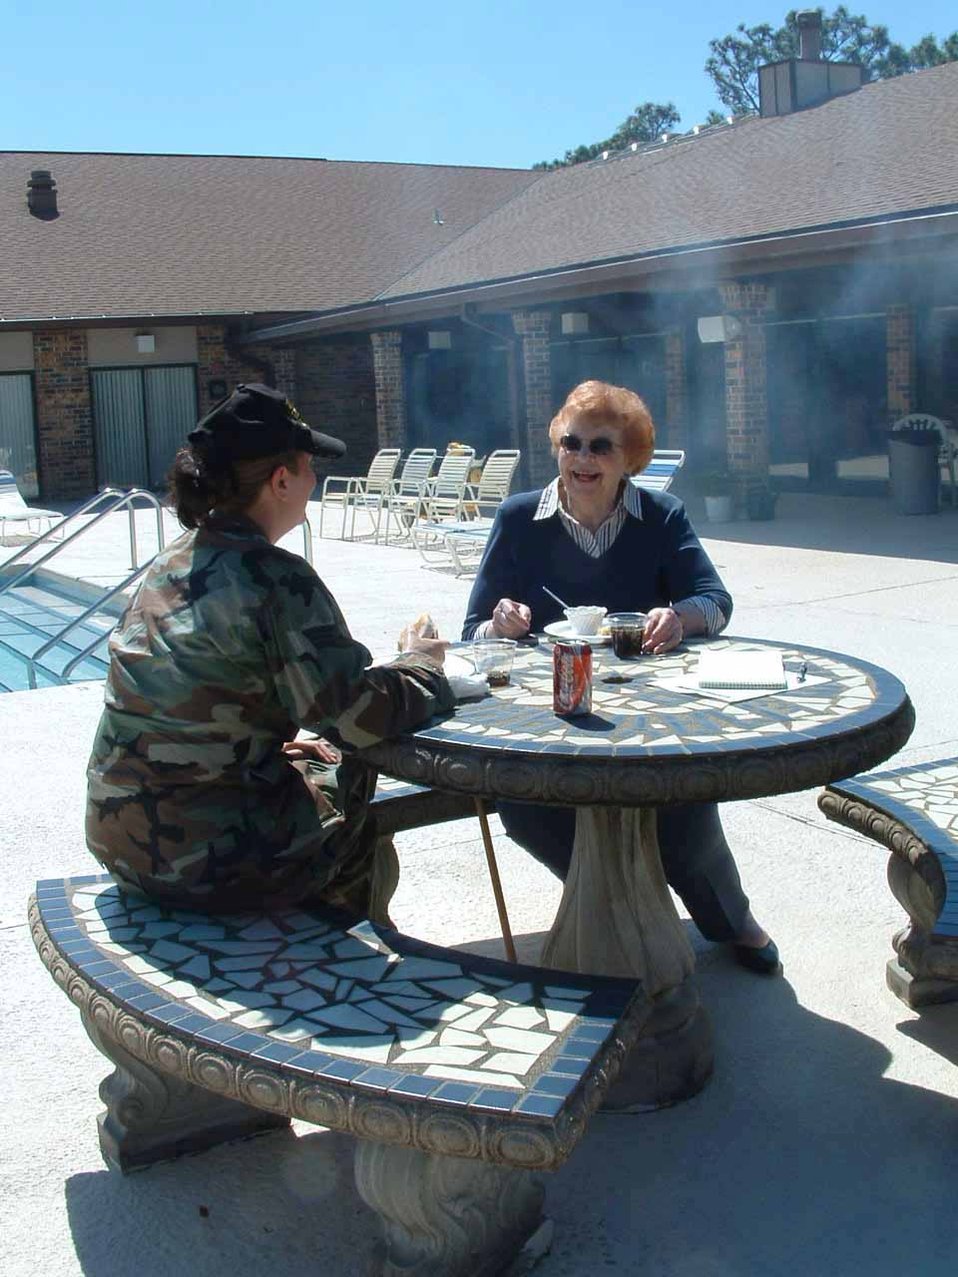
Airman studies psychology

Air Force Enlisted Village resident Sue Lell and Senior Airman Heather Puhl share a laugh during their weekly visit at the village in Shalimar, Fla. Airman Puhl, a psychology student at a nearby college, is studying the effects of aging. She is assigned to the 728th Air Control Squadron at nearby Eglin Air Force Base.